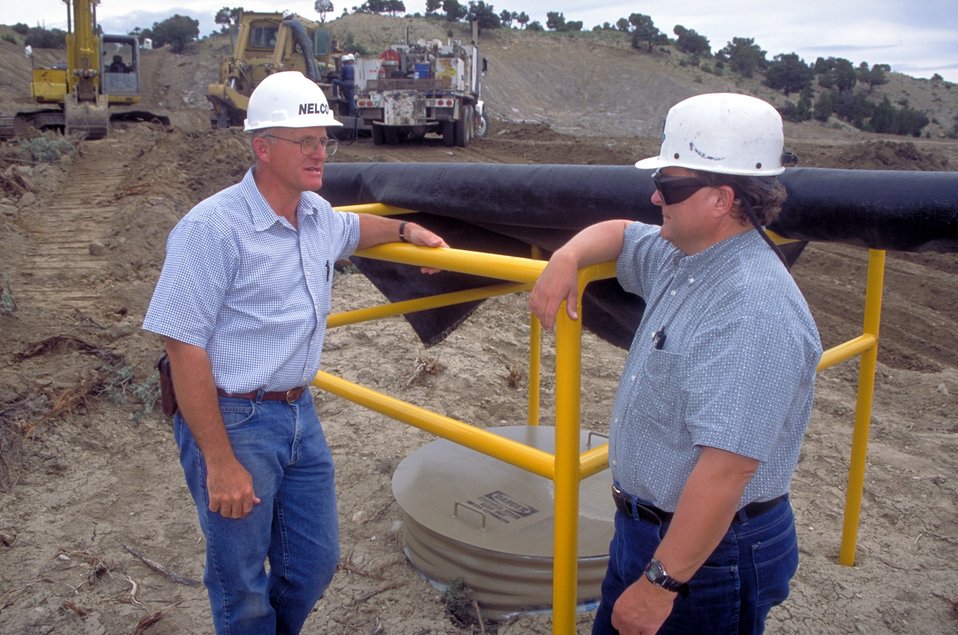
Building a drill pad for coal bed methane production near price, Utah.